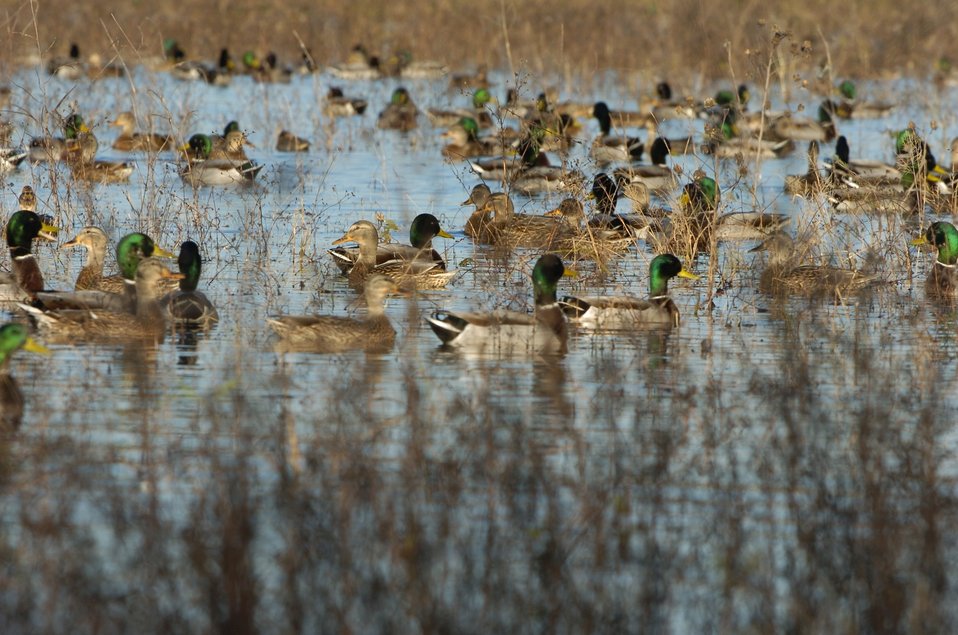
Flock of Mallards

Mallards enjoy the lush habitat at the Funk water production area in the Rainwater Basin National Wildlife Refuge in Nebraska.